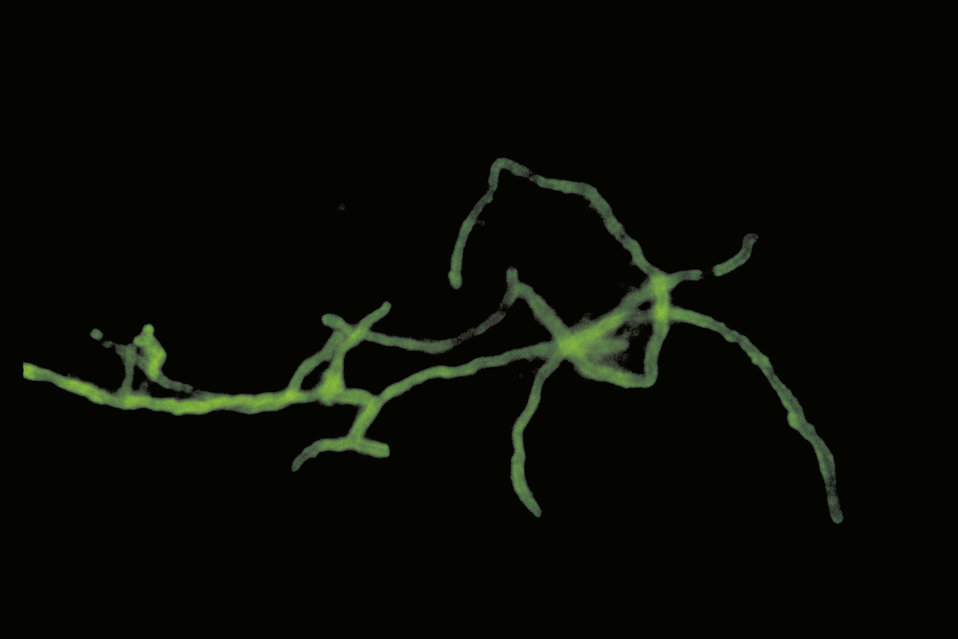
A photomicrograph of Actinomyces israelii taken from a brain abscess, and stained using an FA stain technique.